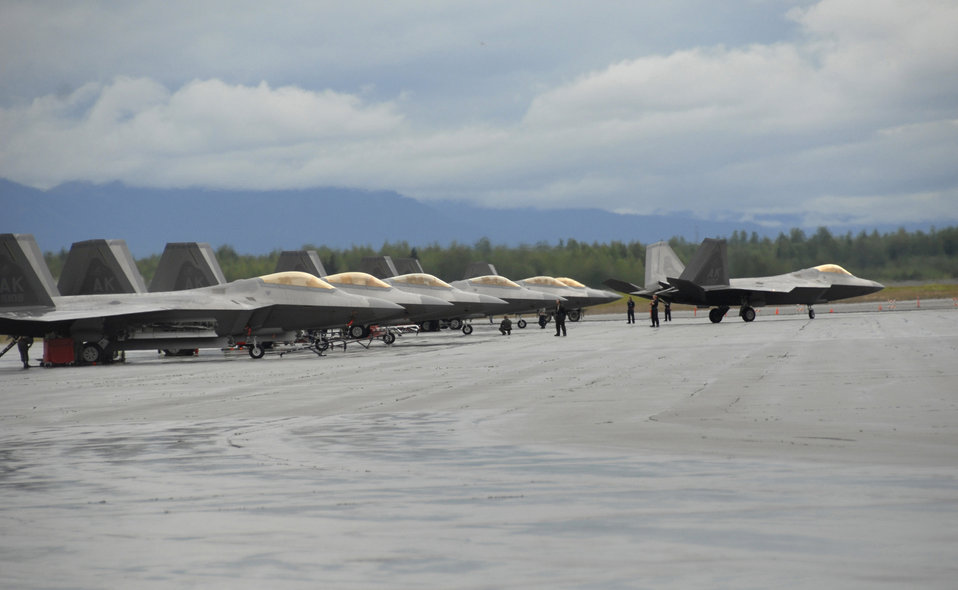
F-22s deploy to the Pacific

Fifteen F-22 Raptors from the 90th Fighter Squadron at Elmendorf Air Force Base, Alaska, are slated to deploy to Andersen AFB, Guam, in January. The deployment supports U.S. Pacific Command's theater security packages in the Western Pacific.